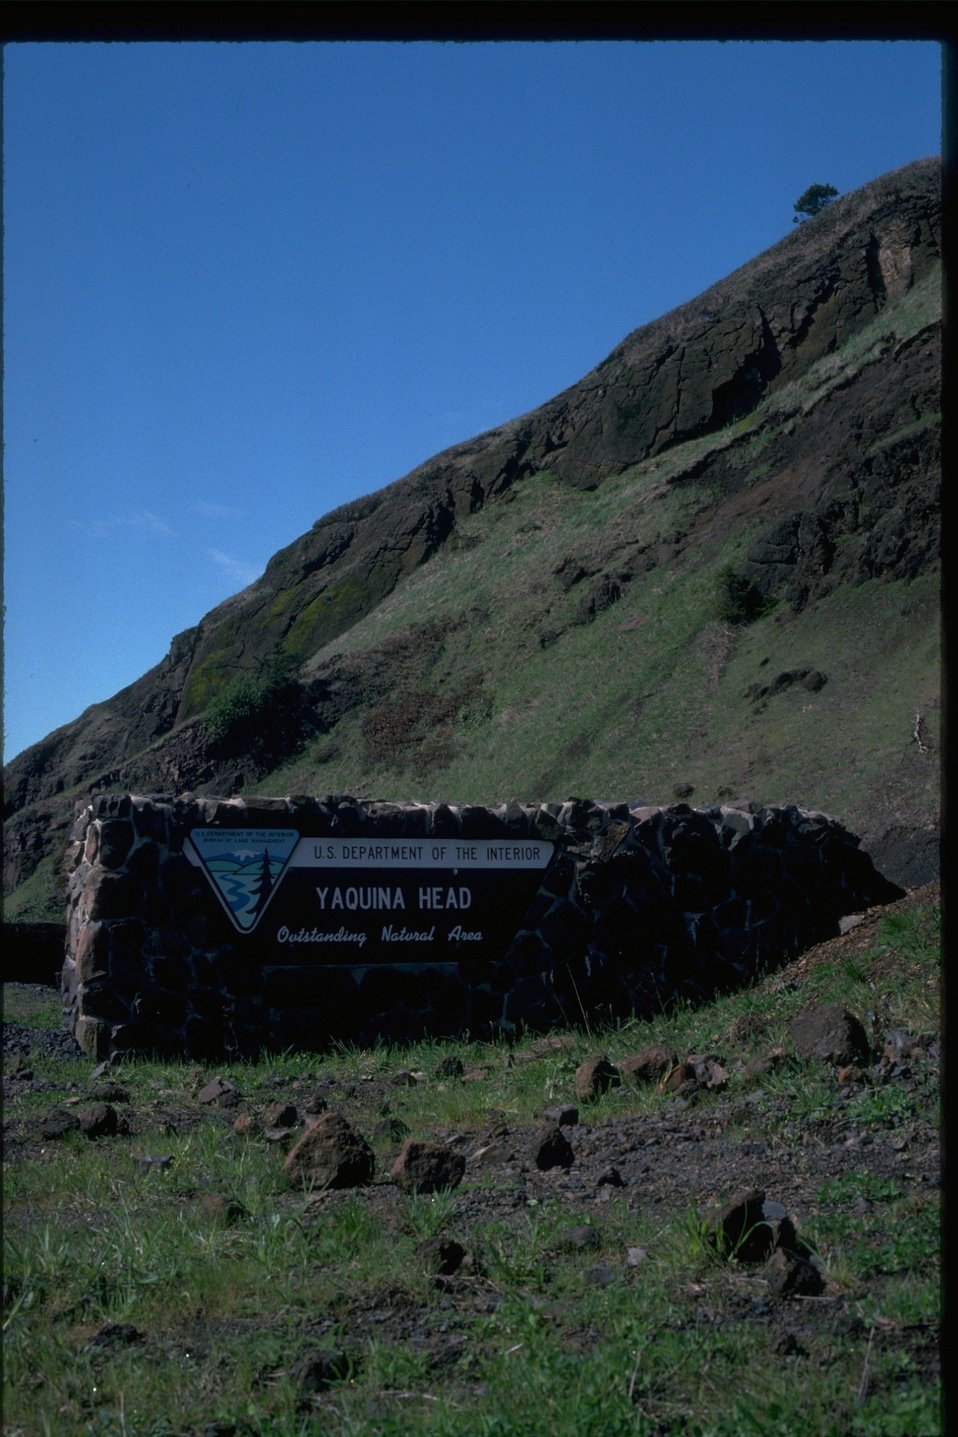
Entrance sign to Yaquina Head Outstanding Natural Area.